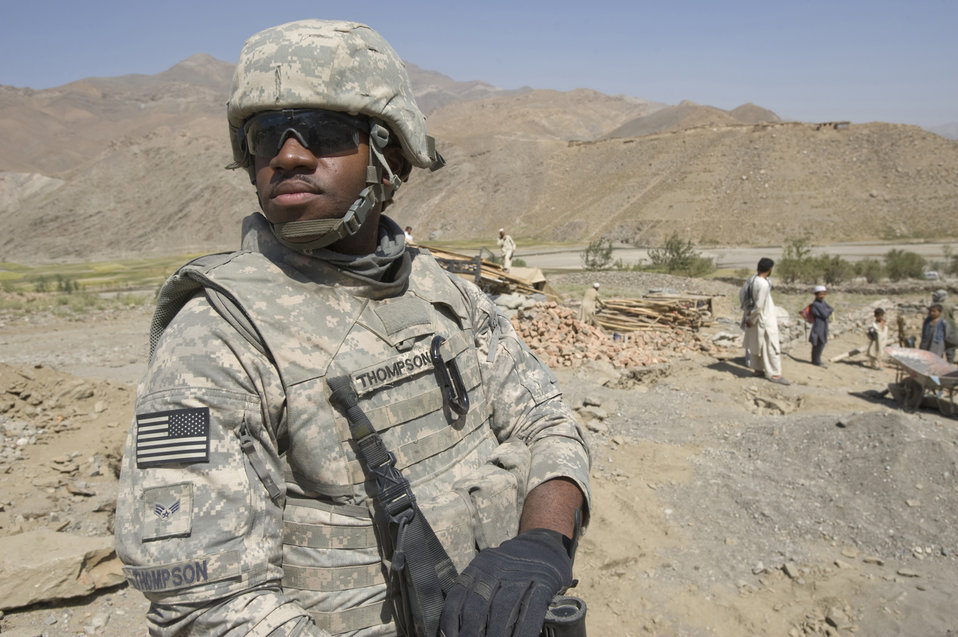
Operation Enduring Freedom

Senior Airman Courtney Thompson stands guard as fellow team members operate a makeshift medical clinic in an isolated Afghan village. The joint-service team has members from the Air Force, Army and Navy assigned to it. Airman Thompson is assigned to the Kapisa and Parwan Provincial Reconstruction Team, Ill.